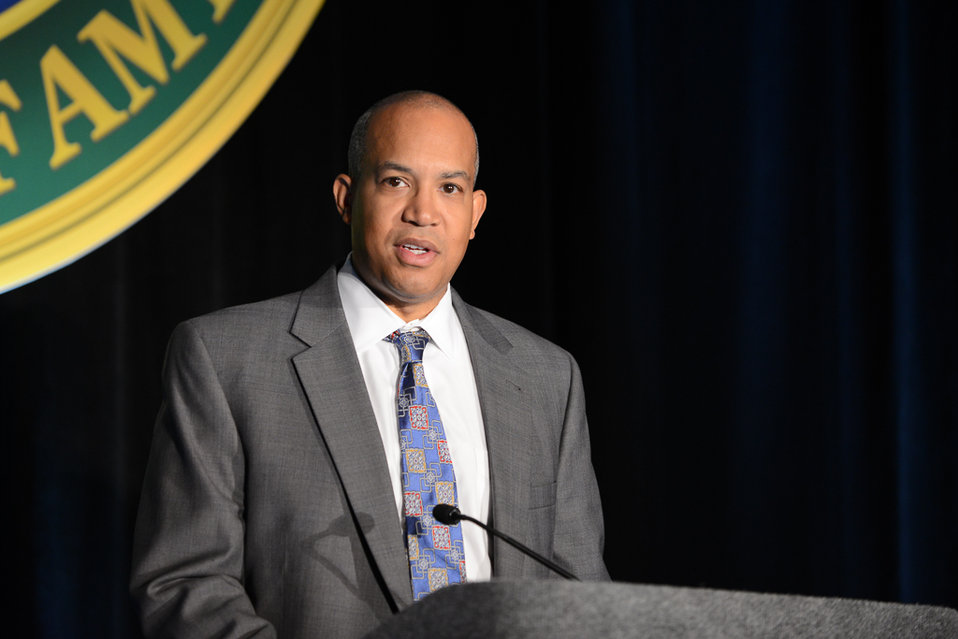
OSDBU Conf 5